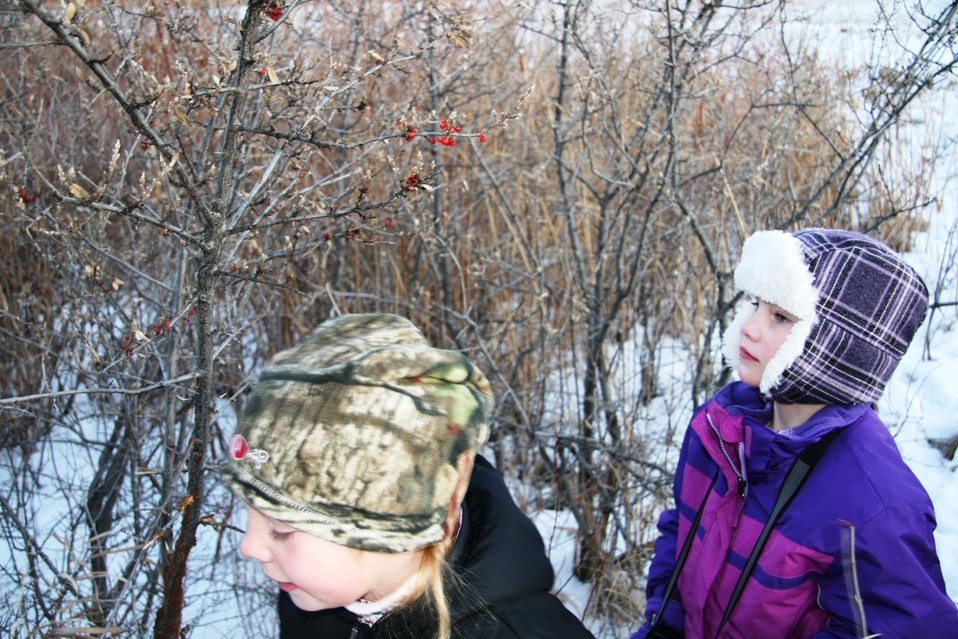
Buffalo Berries for the Birds

Examining Buffalo Berries as a food source for wintering birds, especially the cedar and bohemian waxwings.